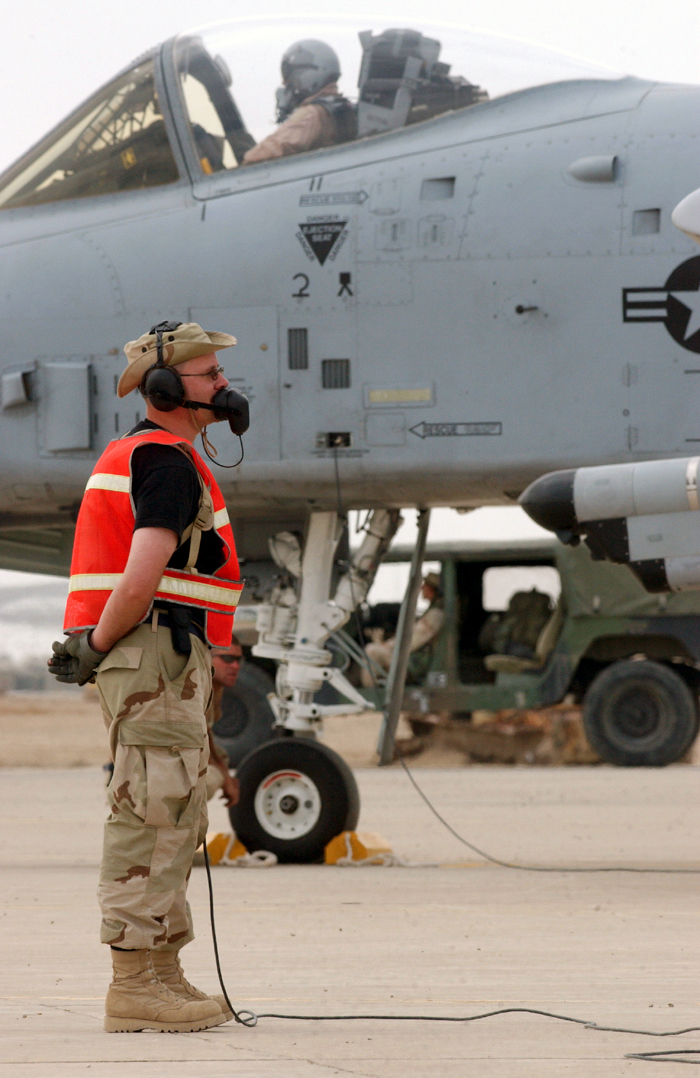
To the fight

OPERATION IRAQI FREEDOM -- Master Sgt. John Kuiper, an aircraft crew chief with the 442nd Fighter Wing, communicates with the pilot during flight control checks for the launch of the A-10 on April 18 for a combat mission over Iraq. The 442nd is from Whiteman Air Force Base, Mo., and is deployed to Tallil Air Base in southern Iraq.